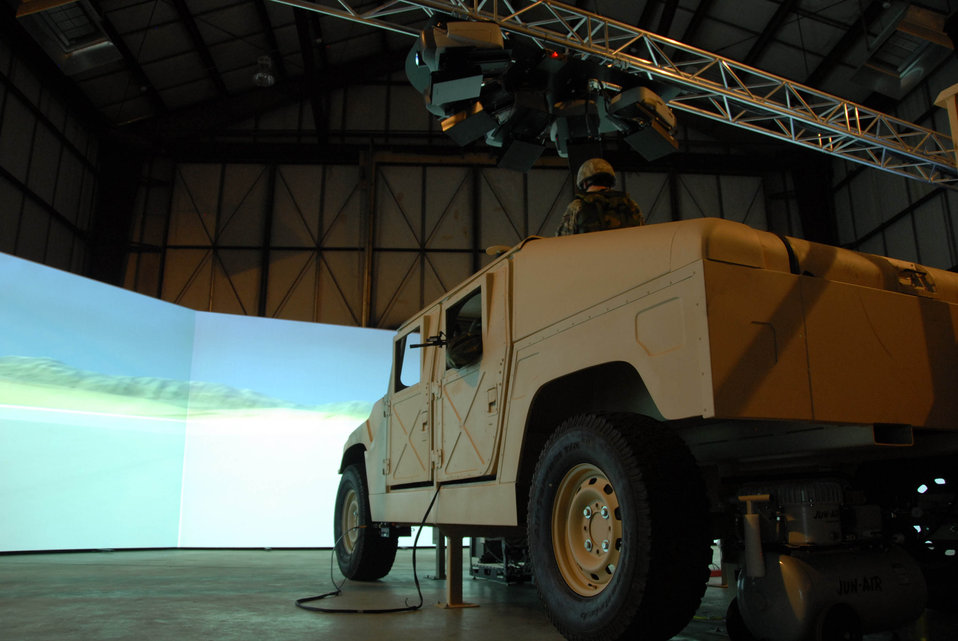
Virtual training for real-world missions

A 280-degree screen brings to life real-world scenarios designed to put a four-person fire team made up of a driver, gunner, rifleman and troop commander through the paces of an actual convoy mission in October at Volk Field, Wis.